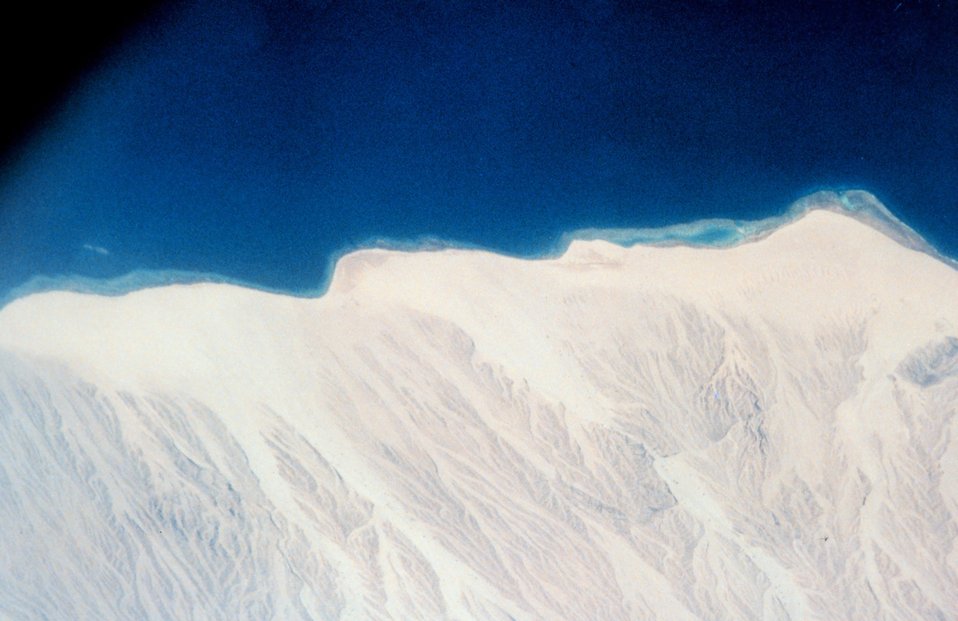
Sinai Desert shoreline on the Gulf of Aqaba